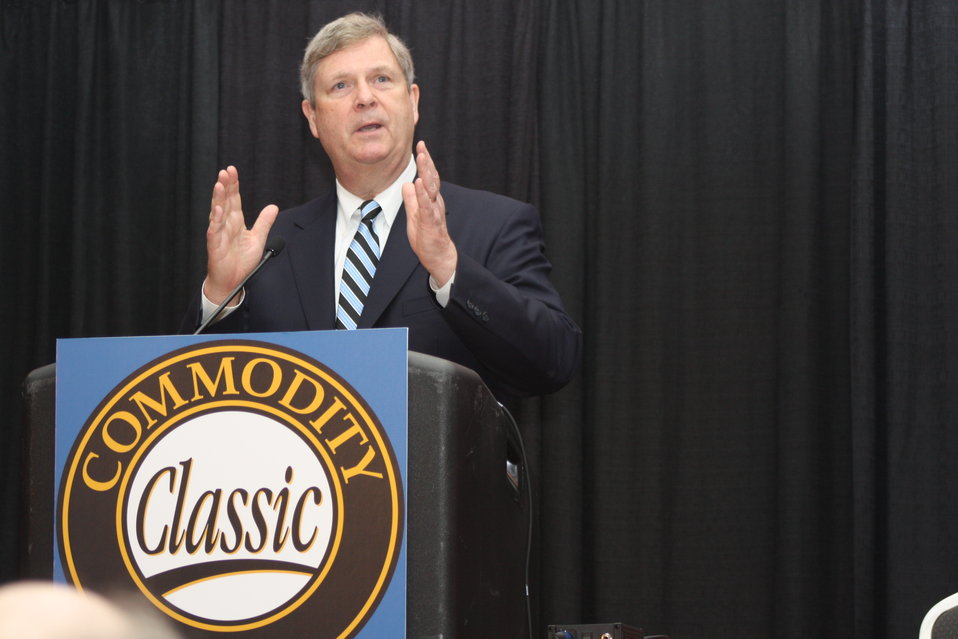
Agriculture Secretary Tom Vilsack discuses the Agricultural Act of 2014 at the Commodity Classic general session in San Antonio, TX on Friday, Feb. 28, 2014. The annual Commodity Classic is open to all corn, soybean, wheat and sorghum growers, member associations, agribusiness, and farm media. It is a farmer-focused and farmer-led convention and trade show.